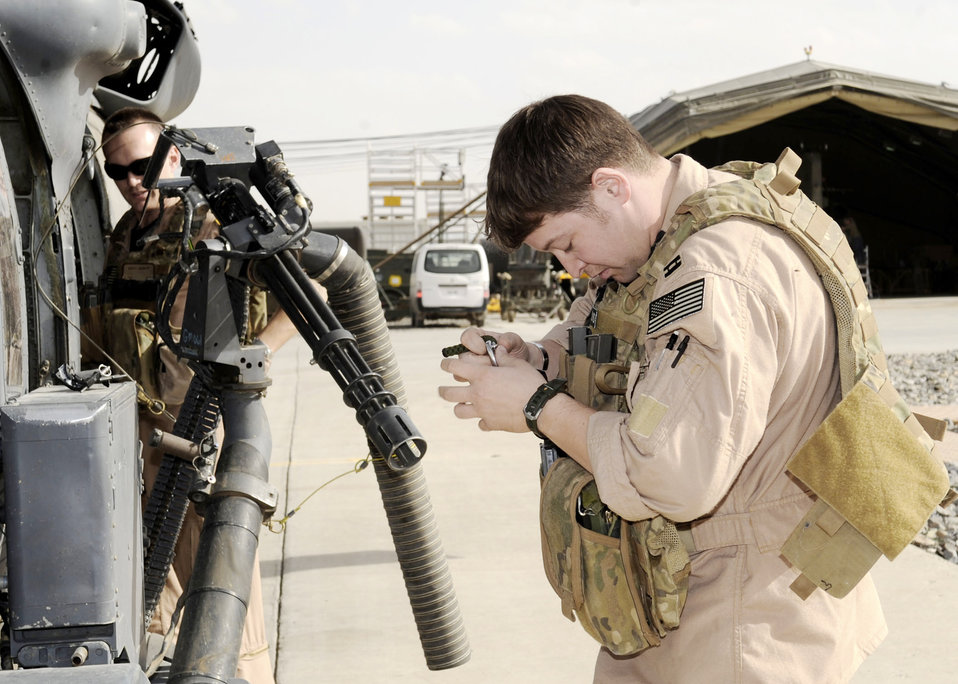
Rescue crews fly into hostile zones to save lives

Capt. Rob Roth gears up during a preflight check March 5, 2010, at Kandahar Airfield, Afghanistan. Captain Roth is assigned to the 66th Expeditionary Rescue Squadron mission pilot from Nellis Air Force Base, Nev.